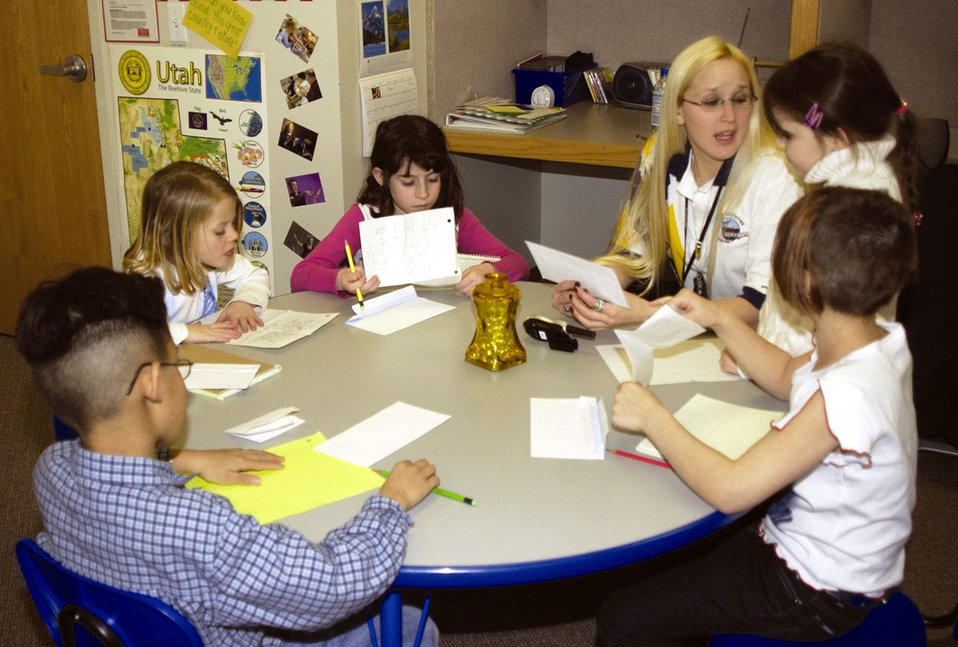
Pen pals

HILL AIR FORCE BASE, Utah -- Children write letters as part of the